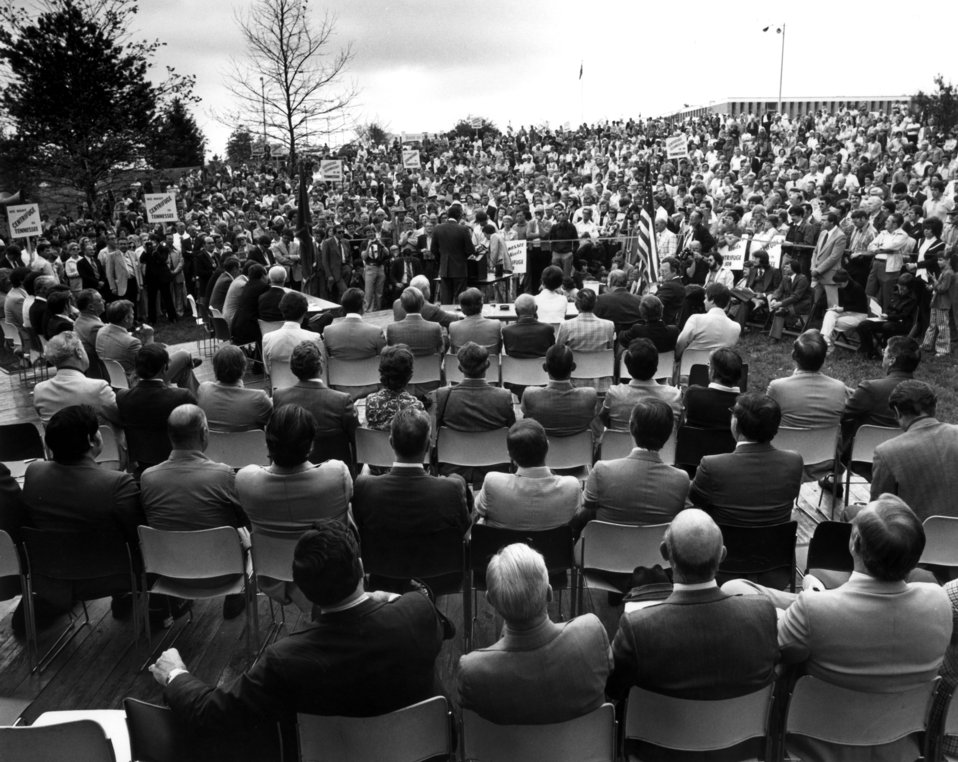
HoffmanCentrifuge Rally Civic Center in Oak Ridge

77-212 DOE photo by Frank Hoffman Centrifuge Rally Civic Center in Oak Ridge Tennessee 4-30-1977